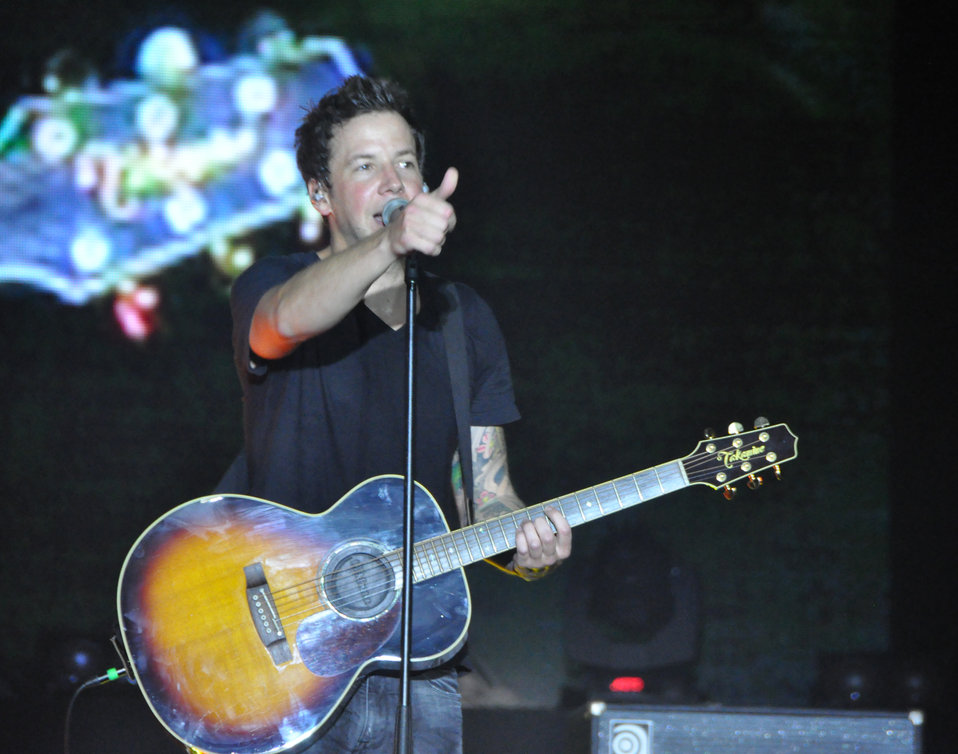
Simple Plan performs at MTV EXIT concert in Hanoi against human trafficking

USAID co-sponsors MTV EXIT concert, campaign against human trafficking